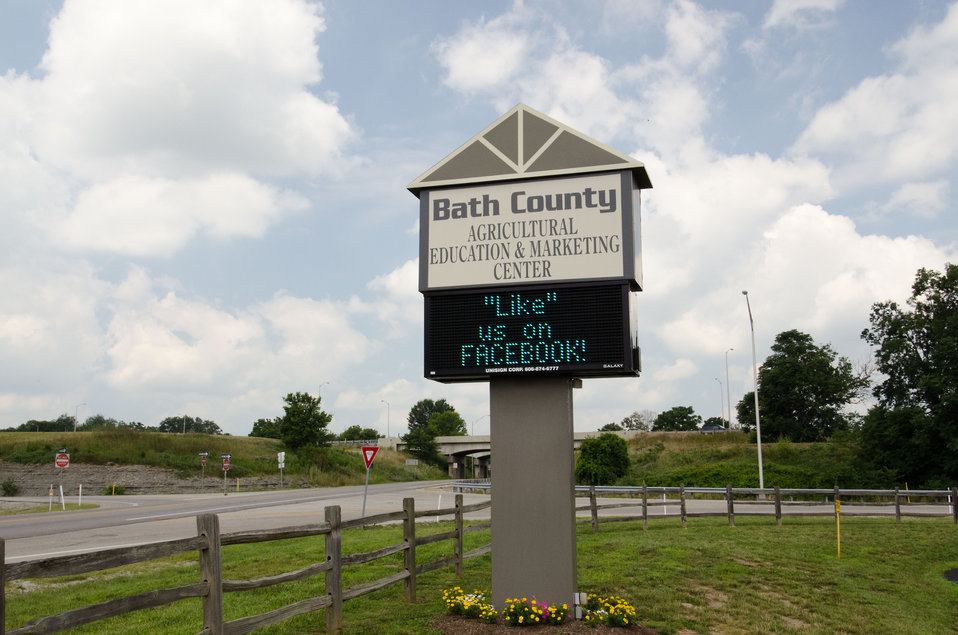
Front sign and electronic marquee of the Bath County Agricultural Education and Marketing Center, Owingsville, KY, on Friday, July 15, 2011. The Center was the recipient of a $400,000 Rural Business Enterprise Grant. It has given farmers and producers from Bath and surrounding counties the opportunity to manufacture and market their locally grown and locally produced value-added and “Kentucky Proud” branded products, including but not limited to, fresh produce, artisan crafts and specialty food products. The Center is open year-round and allow residents to sell products in four different retail categories, including Kentucky products, regional crafts, “green” groceries and bakery/deli. Several producers expressed their gratitude for Rural Development’s assistance in making the center a reality. The project was made possible through American Recovery and Reinvestment Act of 2009 funding enacted by the 111th United States Congress in February 2009 and signed into law on February 17, 2009, by President Barack Obama.